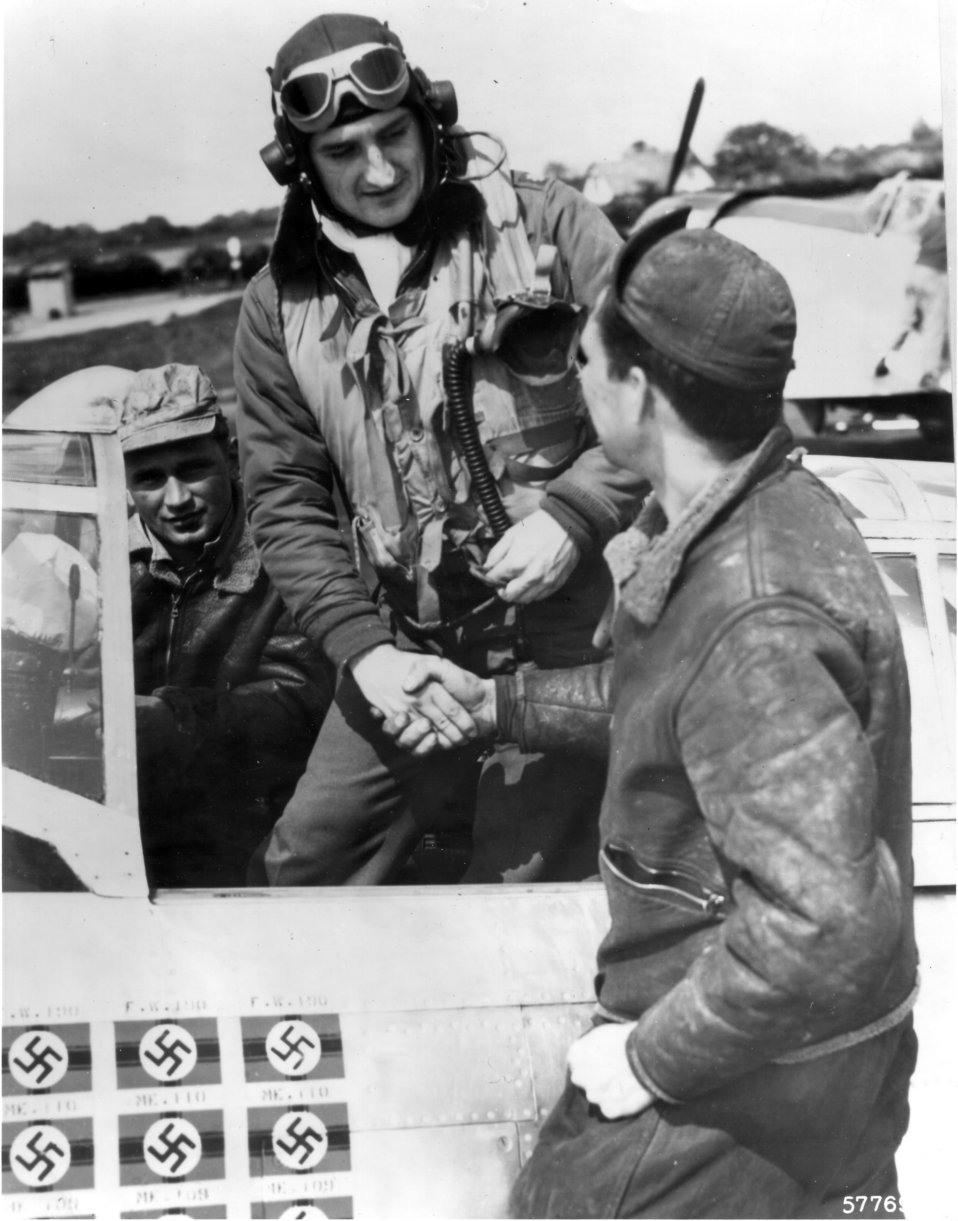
Frances Gabreski

1940's -- Lt. Col. Frances S. Gabreski and Staff Sgt. Ralph Safford, crew chief, prepare for flight. The assistant crew chief is in the background.